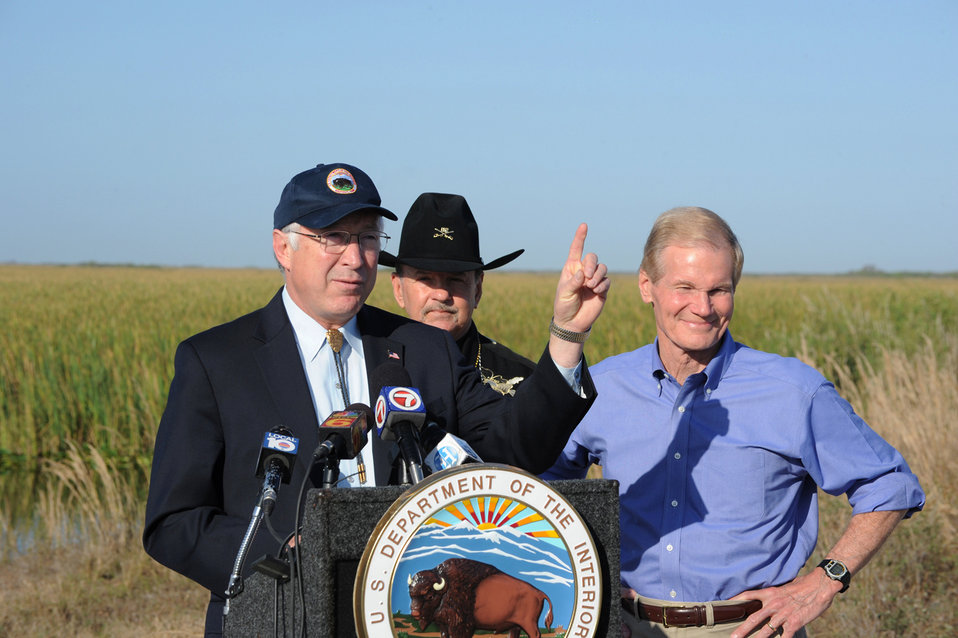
Secretary Ken Salazar and Senator Ben Nelson